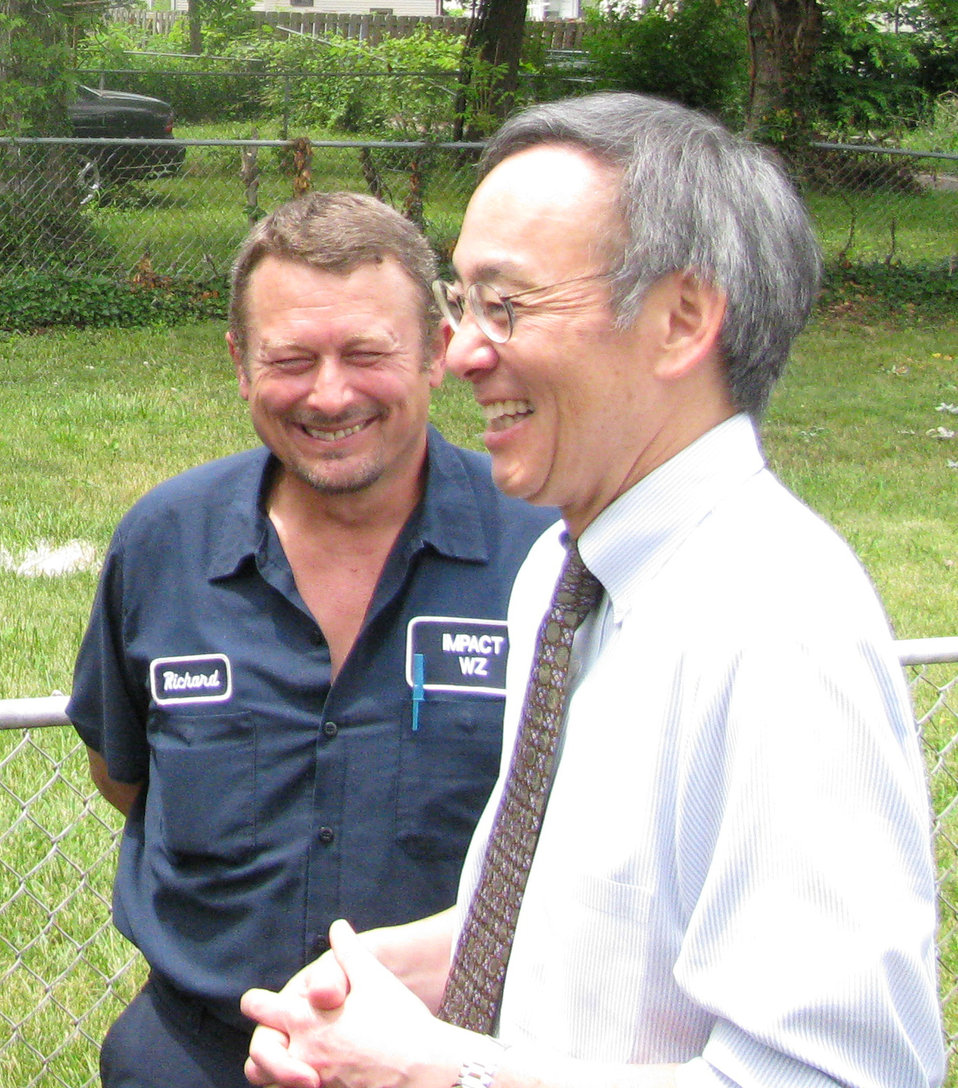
ohio5